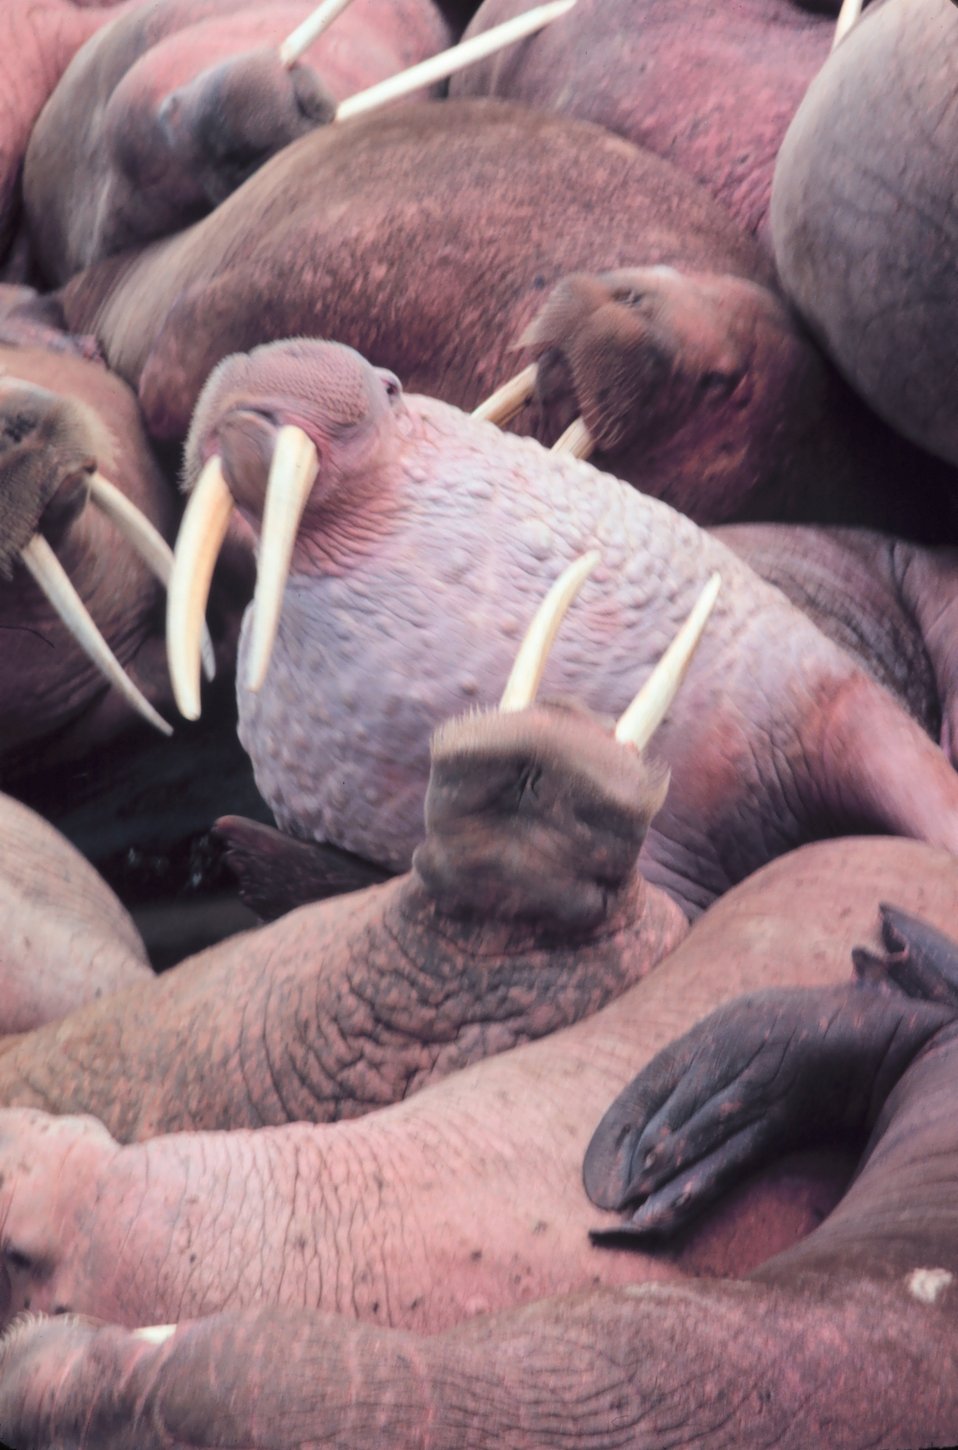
Walrus - Odobenus rosmarus divergens - on Bering Sea island.